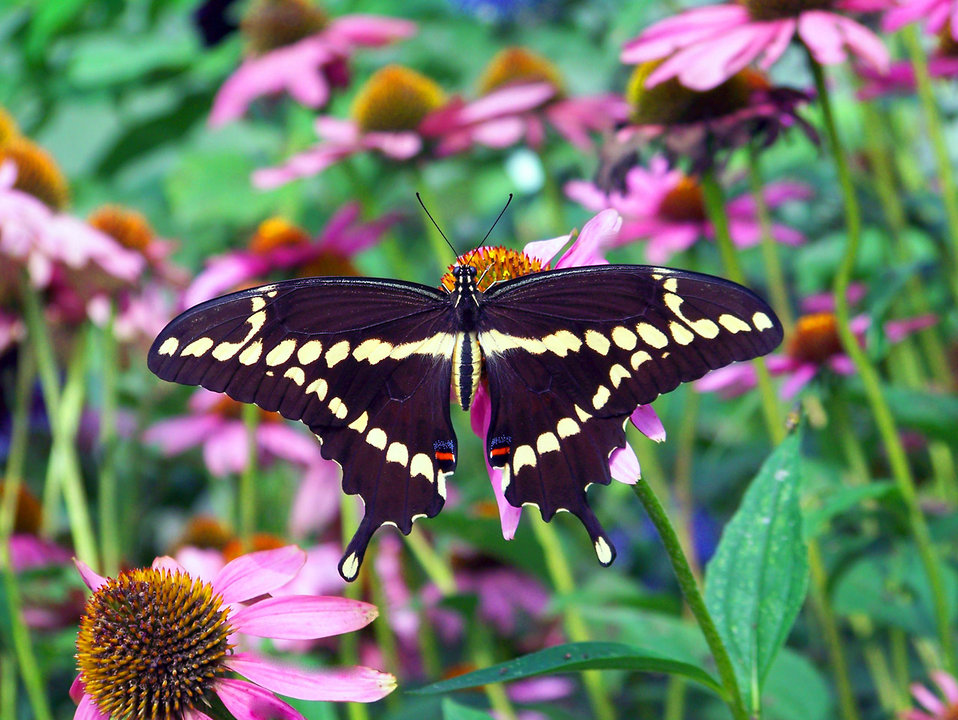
Butterfly on flower.